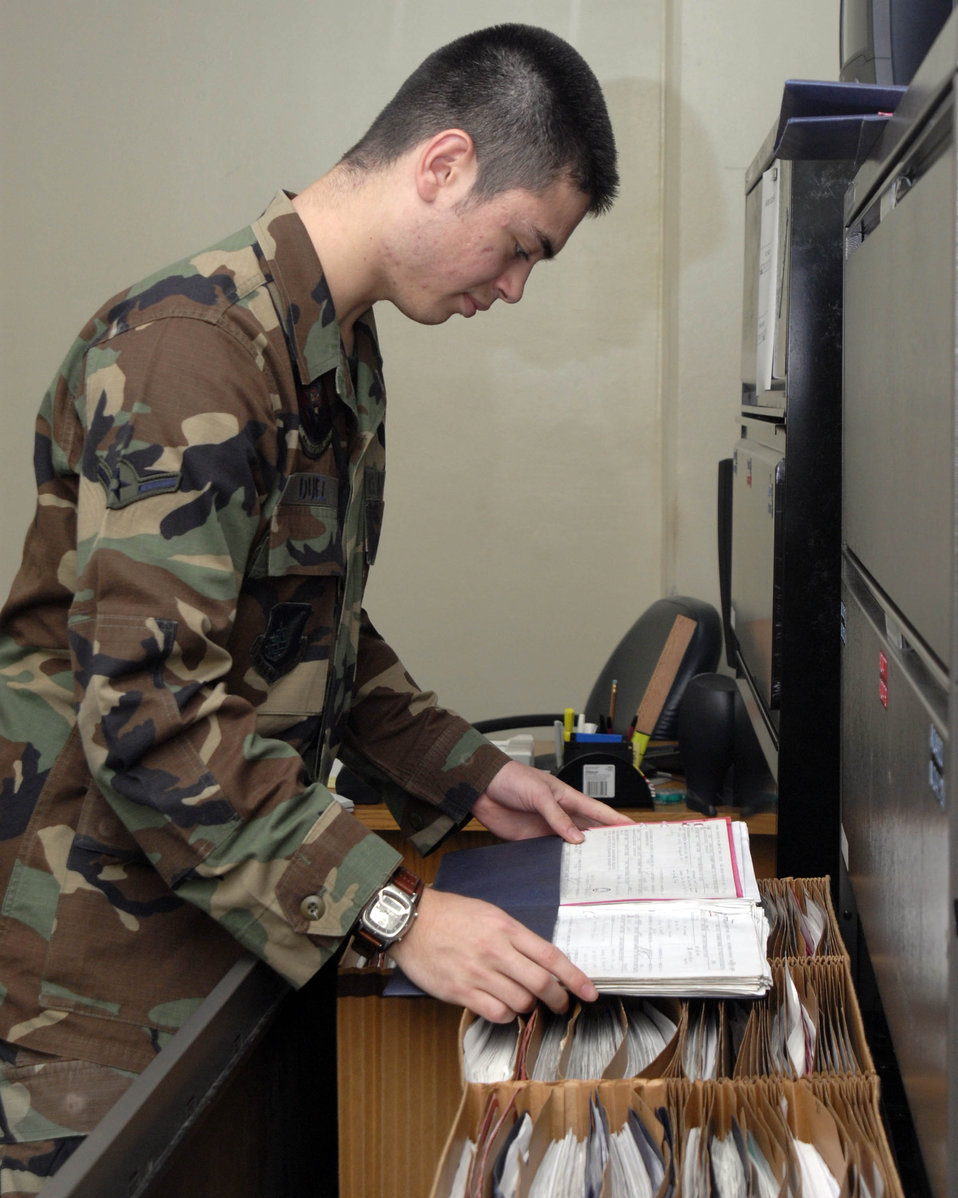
Serving through the season: Airman Van Dexter Duez

Airman VanDexter Duez reviews folders Dec. 13 at Kadena Air Base, Japan. Airman Duez manages the weekly flying and maintenance schedule for the 44th Aircarft Maintenance Unit.